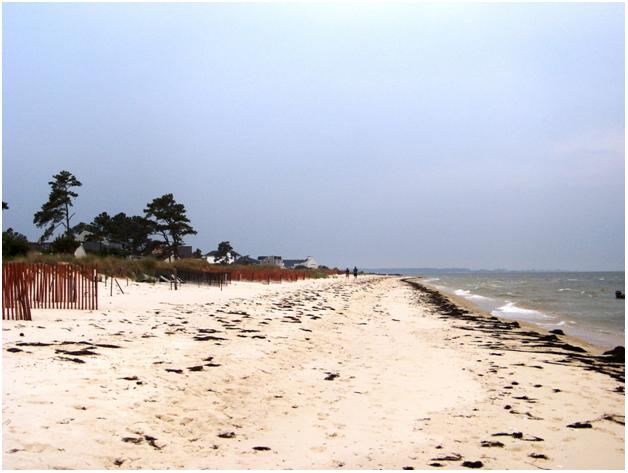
Bavon Beach

Private landowners control about 85 percent of the bay’s shoreline, and development along the bay beaches results in efforts to protect property from the same forces that maintain the beaches. These beaches are lost, reduced in extent or significantly degraded by shoreline hardening with structures such as revetments, bulkheads and groins.